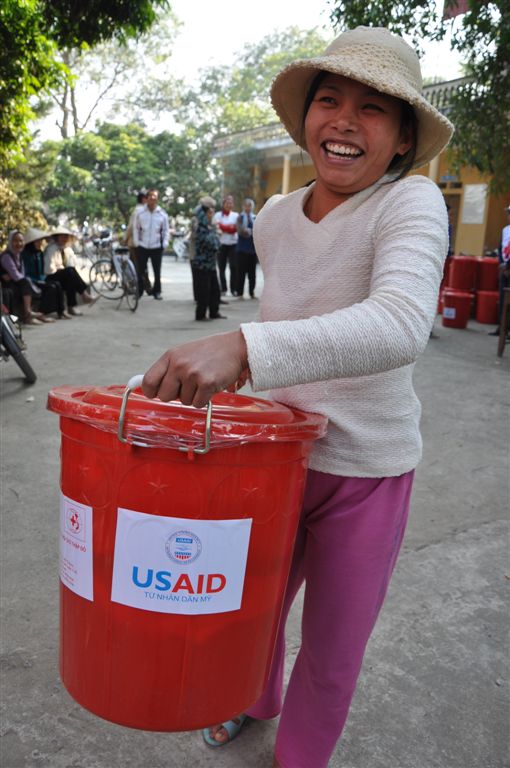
Thian Thi Ngoi from Lien Chau District carries home flood assistance supplies funded by USAID.